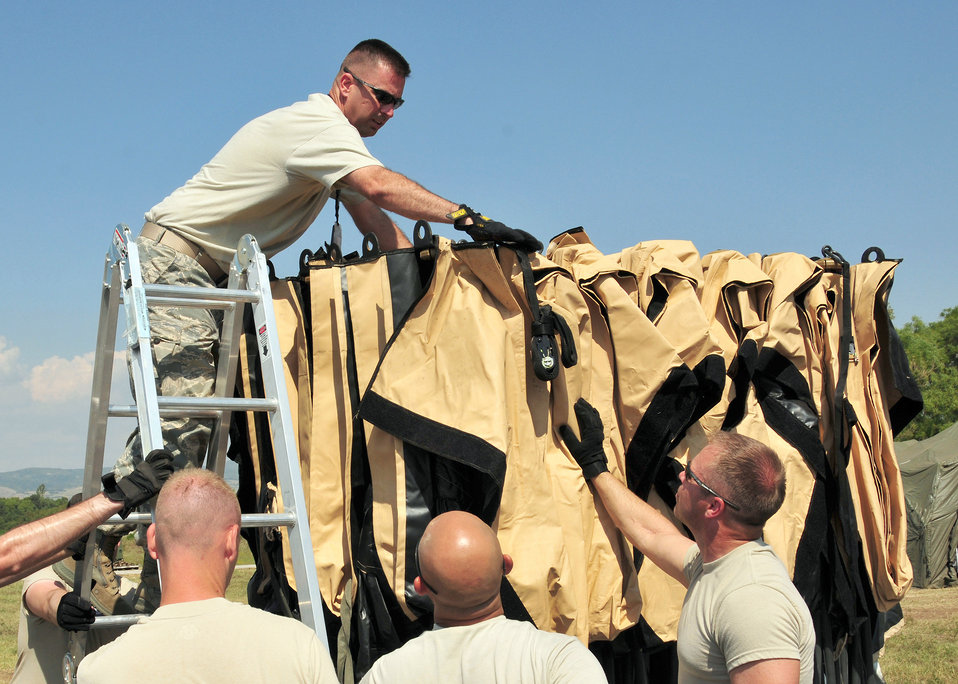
Ramstein Airmen support 15-nation medical training exercise

Master Sgt. Ryan Leith (top) along with fellow contingency response group members, set up a tent in the Knez Mihailo Barracks Aug. 29, 2009 in Nis, Serbia. Sergeant Leith, along with 31 435th Air Ground Operations Wing members, deployed to Serbia for two weeks in support of the Medical Training Exercise in Central and Eastern Europe 2009. Sergeant Leith is a 435th Expeditionary Air Ground Operations Group medical technician.